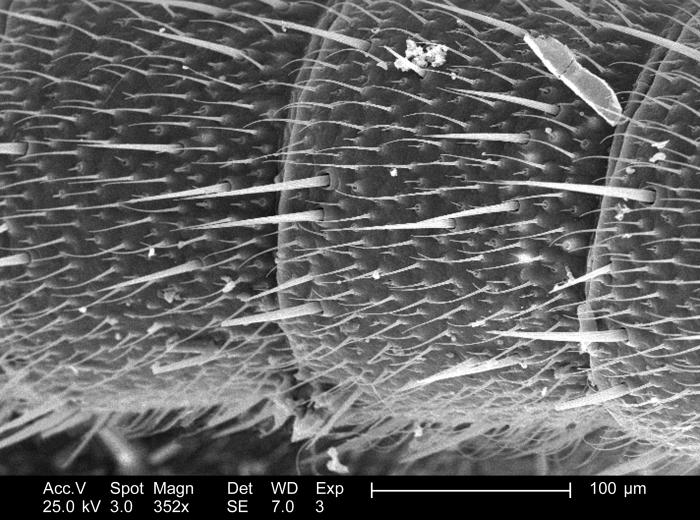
This relatively low-powered scanning electron micrograph (SEM), magnified 352x, revealed the structural details displayed along the exterior of the segmented length of an unidentified dragonfly's antenna. This insect was found deceased on the grounds of the Decatur, Georgia suburbs, and after its demise, retained a morphologically pristine state.